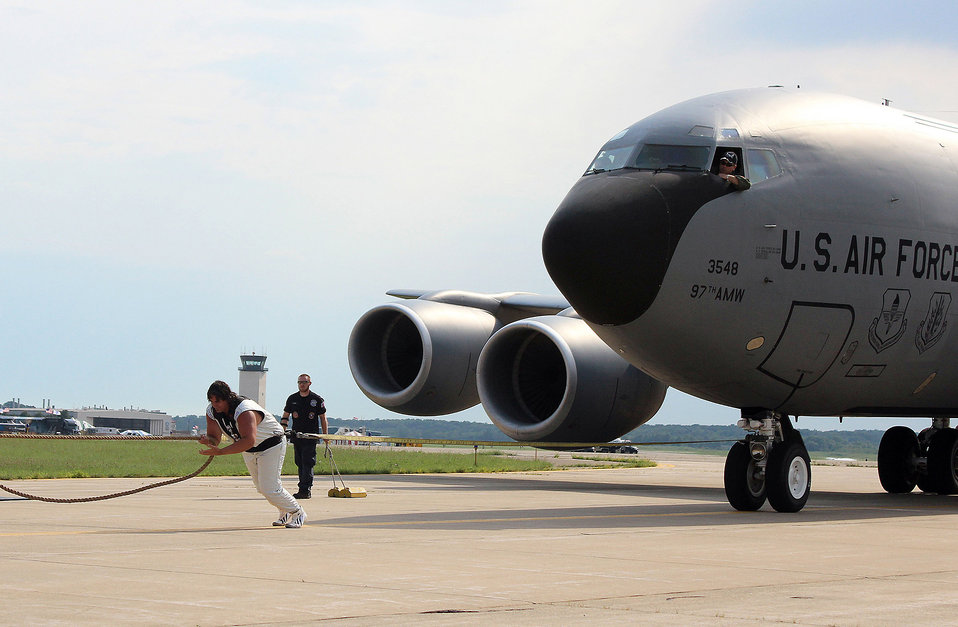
KC-135 and the Strongman

Strongman Mark Kirsch pulls a 140,000 pound KC-135 Stratotanker July 1, 2011, during the Battle Creek Field of Flight and Balloon Festival in Battle Creek, Mich. The KC-135 is assigned to the 54th Air Refueling Squadron at Altus Air Force Base, Okla., and was the first Air Force plane to ever be pulled by a strongman.